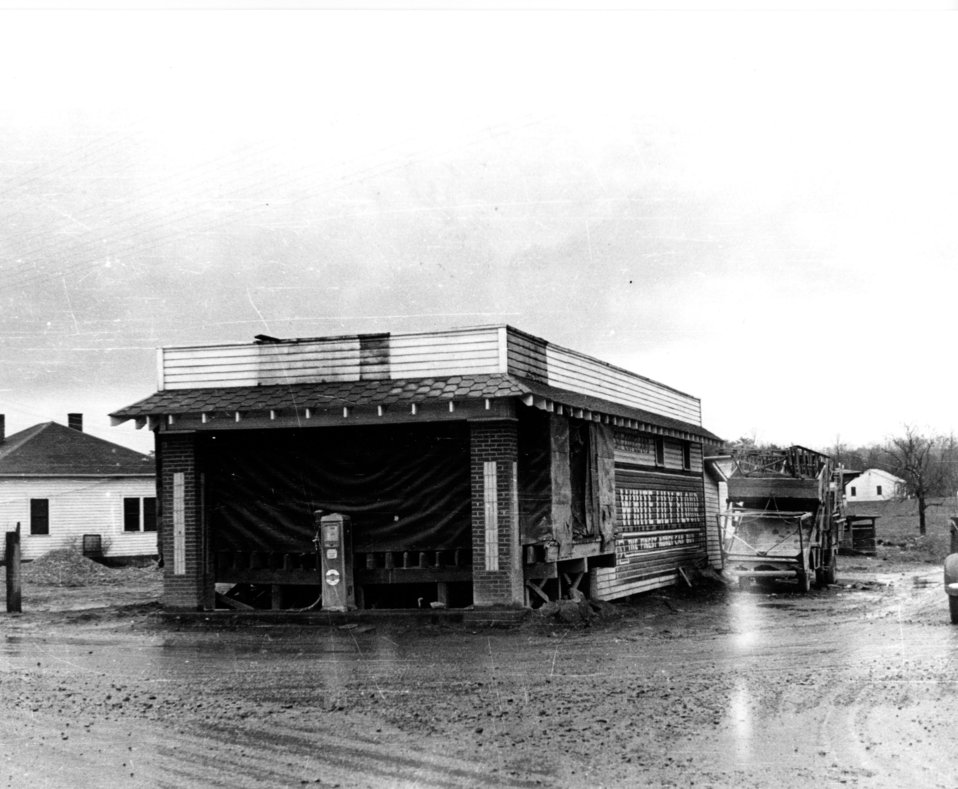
Business activity at Oak Ridge